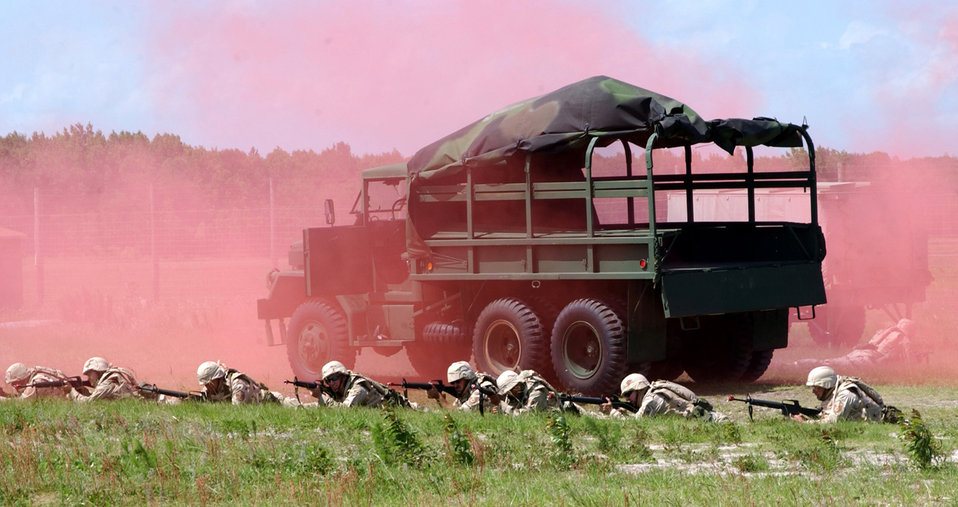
Defensive measures

JACKSONVILLE, Fla. -- Airmen with the Florida Air National Guard's 125th Fighter Wing civil engineer squadron participate in convoy defense training here.